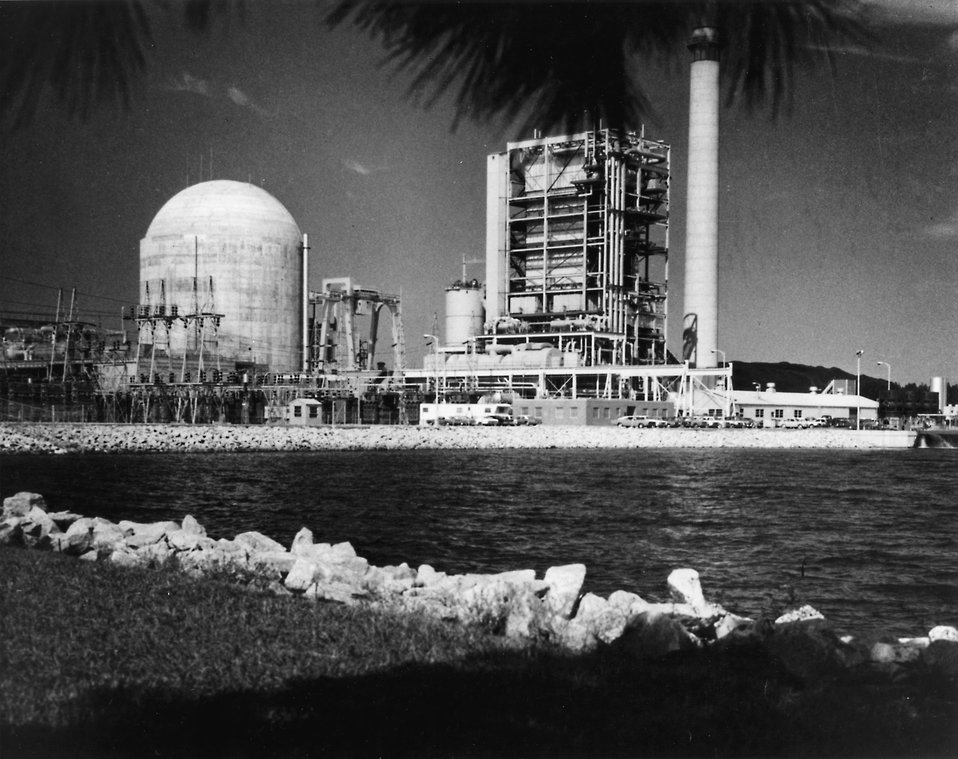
Martsville, SC... Ground view of the Robinson #1 fossil-fired unit and the HS Robinson Steam Electric Plant #2 nuclear unit. Circa 1975.